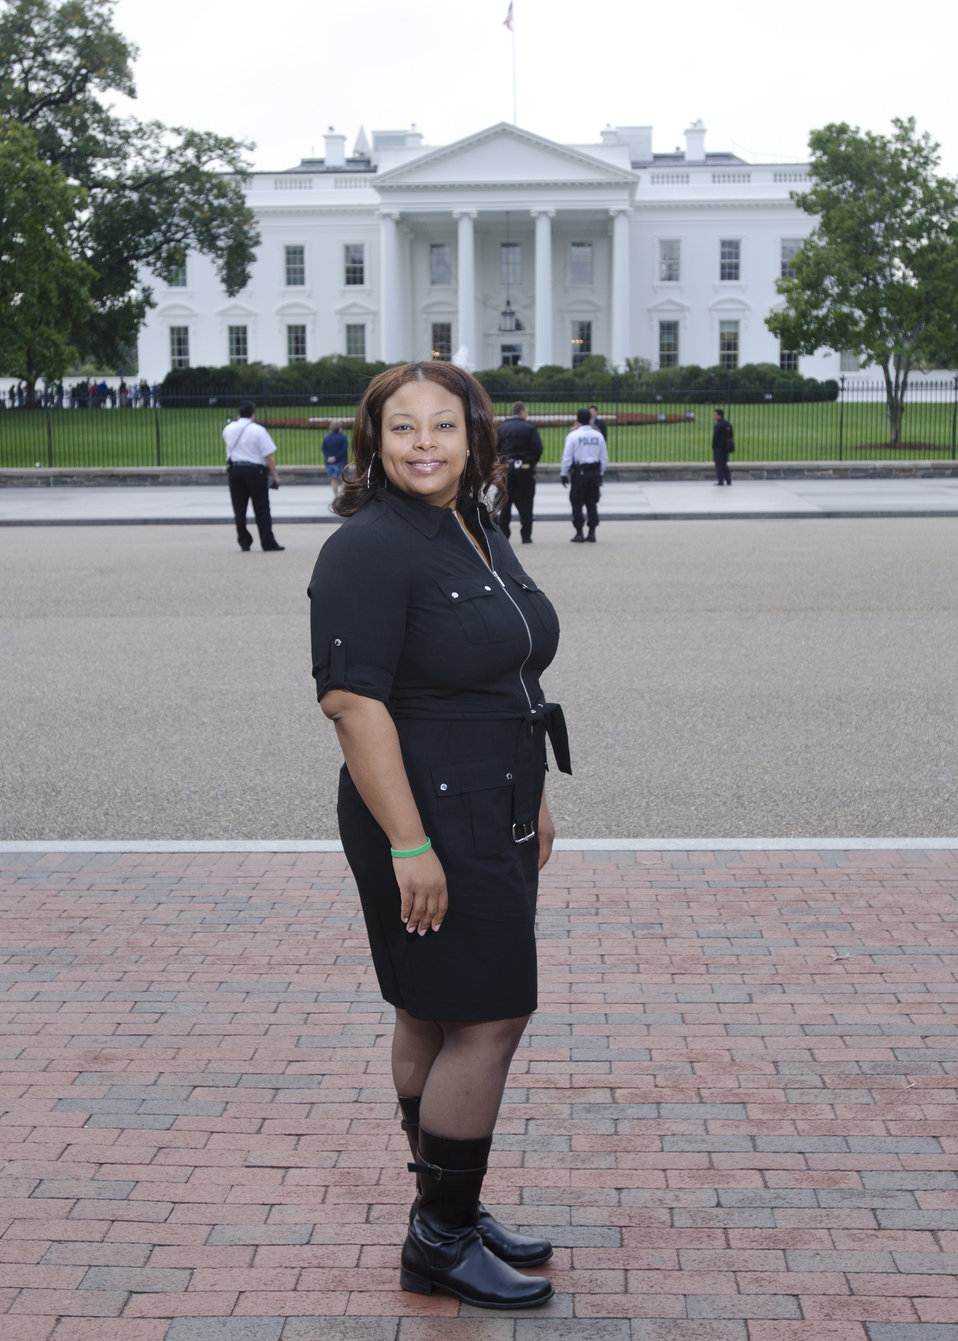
Champion of Change recipient Kea Norrell Boyd in front of the White House in Washington, D.C. on Tuesday, Oct. 9, 2012. Boyd is an Educator for the Wayne County 4-H Mentoring Program, part of the Children & Youth Institute at Michigan State University Extension. Boyd has devoted her career to advocating for disadvantaged youth in Detroit and has spent the last six and a half years expanding the 4-H Mentoring Program to provide at-risk youth with positive adult role models. Kea is a Co-Coach for the MSUE statewide Mentoring Team and served as a co-author for the Ready to Go: A Mentor Training Toolkit curriculum project.